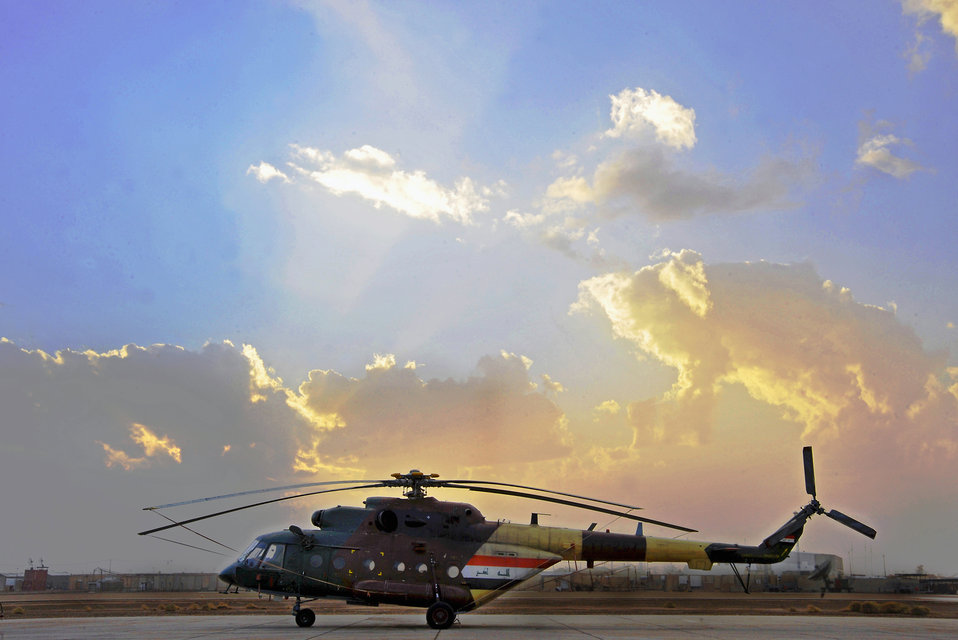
721st AEAS

An Iraqi Army Aviation Command Mi-17 helicopter sits Dec. 12, 2010, on the flightline in Taji, Iraq. The Mi-17 is one of several helicopters that the AAC has at Taji. Air advisers with the 721st AEAS work with AAC members at Taji to advise and assist them in building a safe, self-sustaining Iraqi rotary-wing force.